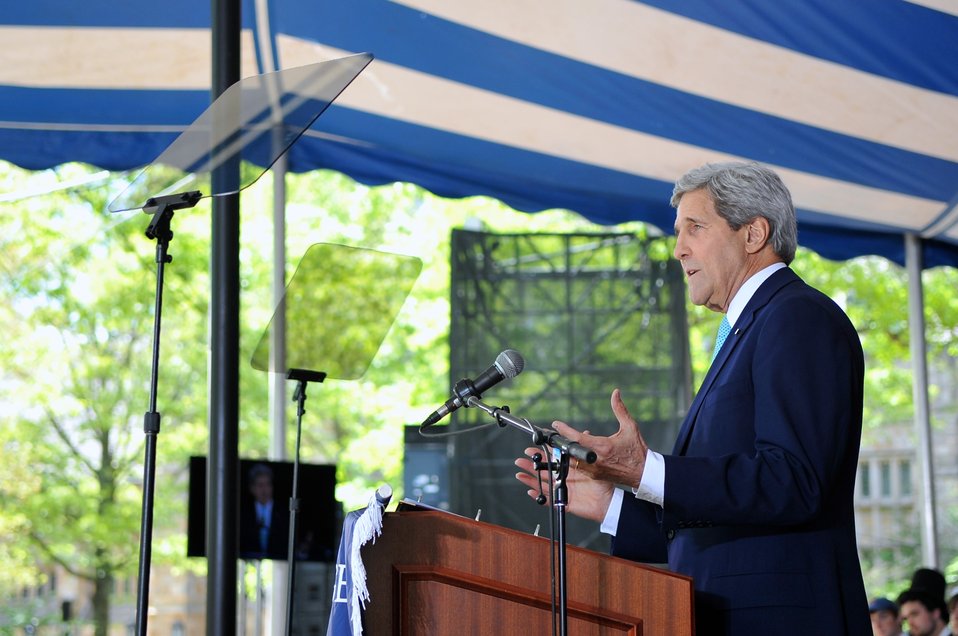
Secretary Kerry Delivers Class Day Remarks at Yale University

U.S. Secretary of State John Kerry addresses Yale University graduates and their families and friends as the 1966 graduate delivers a Class Day speech on the campus in New Haven, Connecticut, on May 18, 2014.